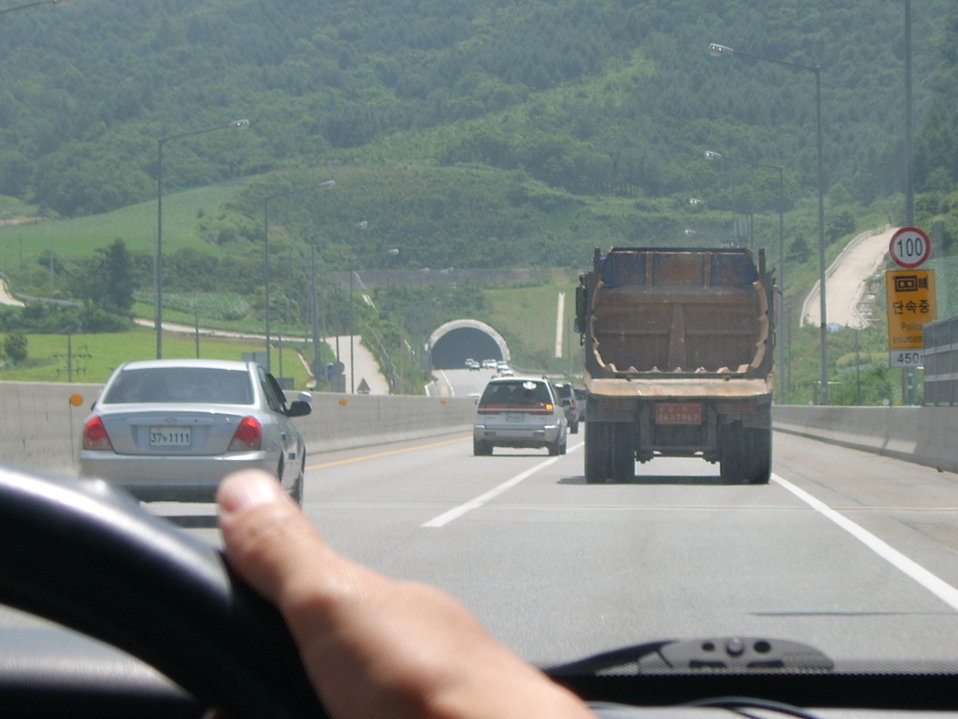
한국어: 대관령 1터널(영동고속도로) Daegwanryeong 1st tunnel(Yeongdong Expressway)